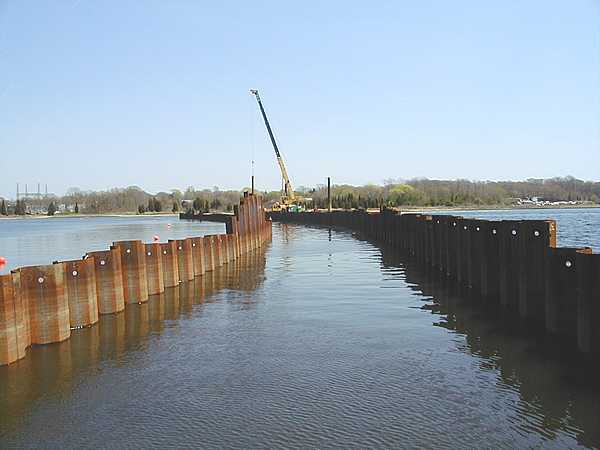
2001, EPA and NSTAR begin to relocate power cables across harbor

EPA and NSTAR are working together to relocate thirteen power cables that are submerged across the harbor bottom. The first phase of work took place in 2001.

Sheet piles were driven into the river creating two corridors extending halfway across the river. A trench was excavated in one corridor while the second received the trench's excavated sediment. A cable conduit was laid along the trench and covered with a one-foot thick concrete protective cap. The inner sheet pile wall was removed and the excavated sediment leveled out over the conduit. The process was repeated on the second half of the river. The cable conduit is in place and the new upgraded-capacity cable is installed and activated. The thirteen power cables are now pulled through the relocated cable conduit and were activated in 2003.